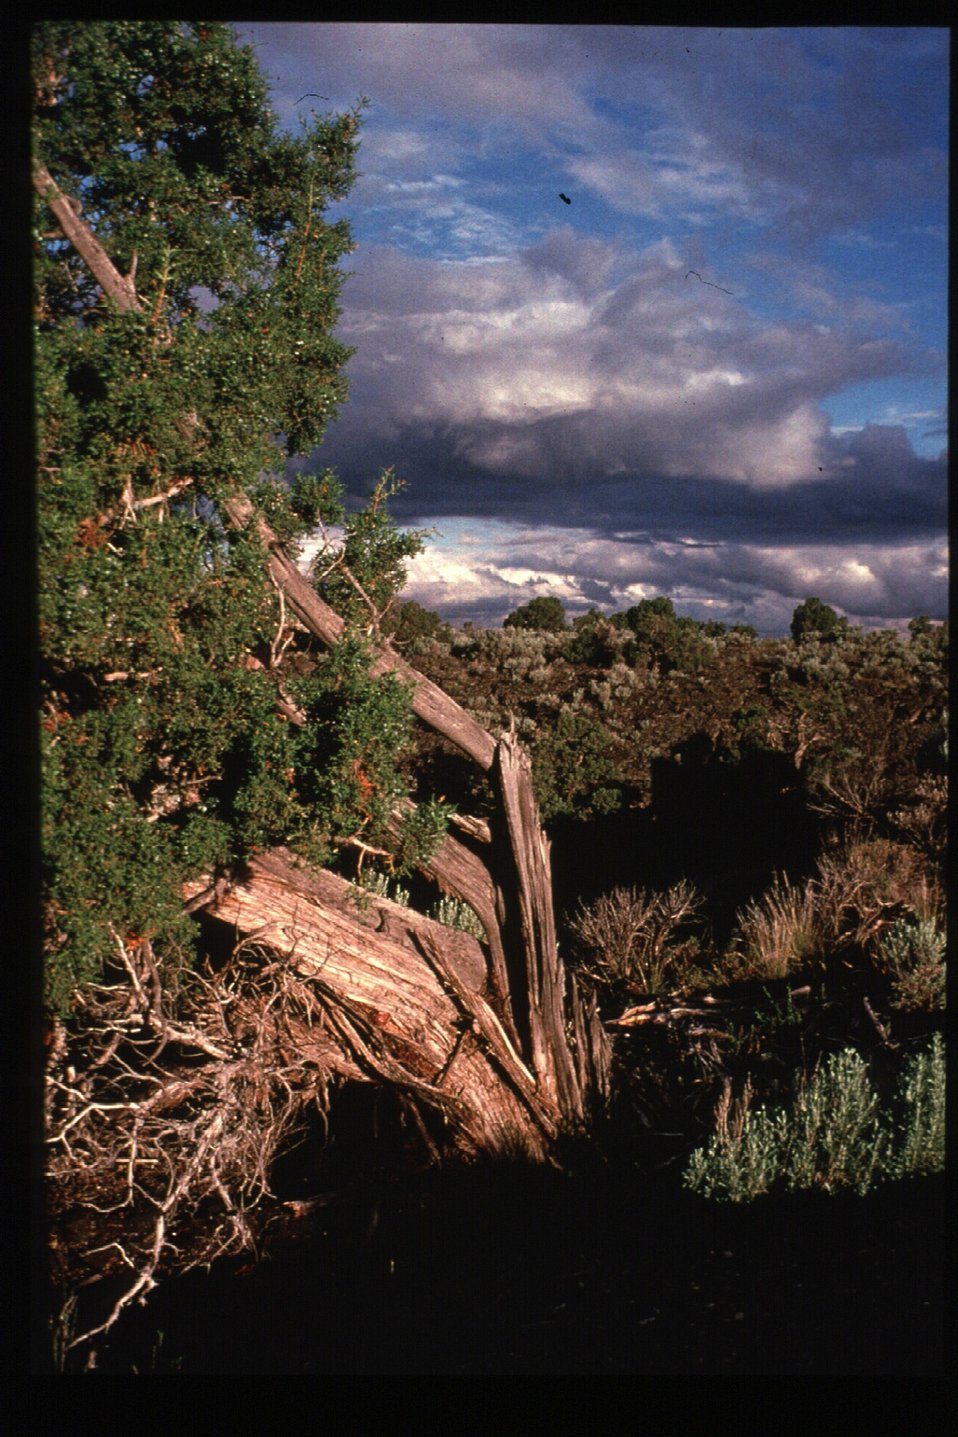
South Fork of Snake River Idaho Falls Field Office USRD Upper Snake River District